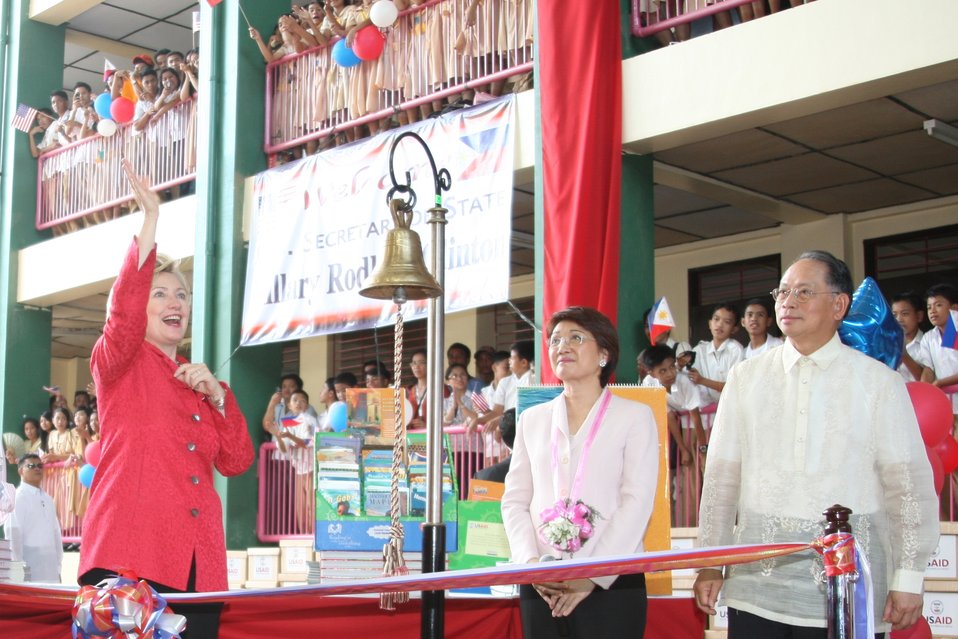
Secretary Clinton Visits Flood-Stricken High School

U.S. Secretary of State Hillary Rodham Clinton applauds during her visit to the flood-stricken Malanday National High School at Marikina city, east of Manila, Philippines, November 12, 2009.